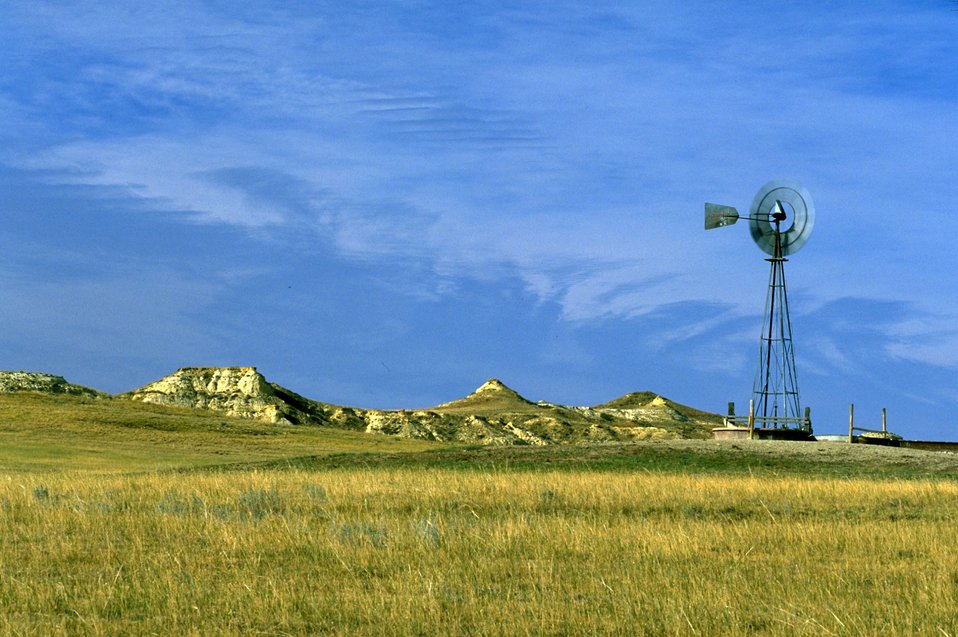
Windmill below the Terry Badlands in eastern Montana